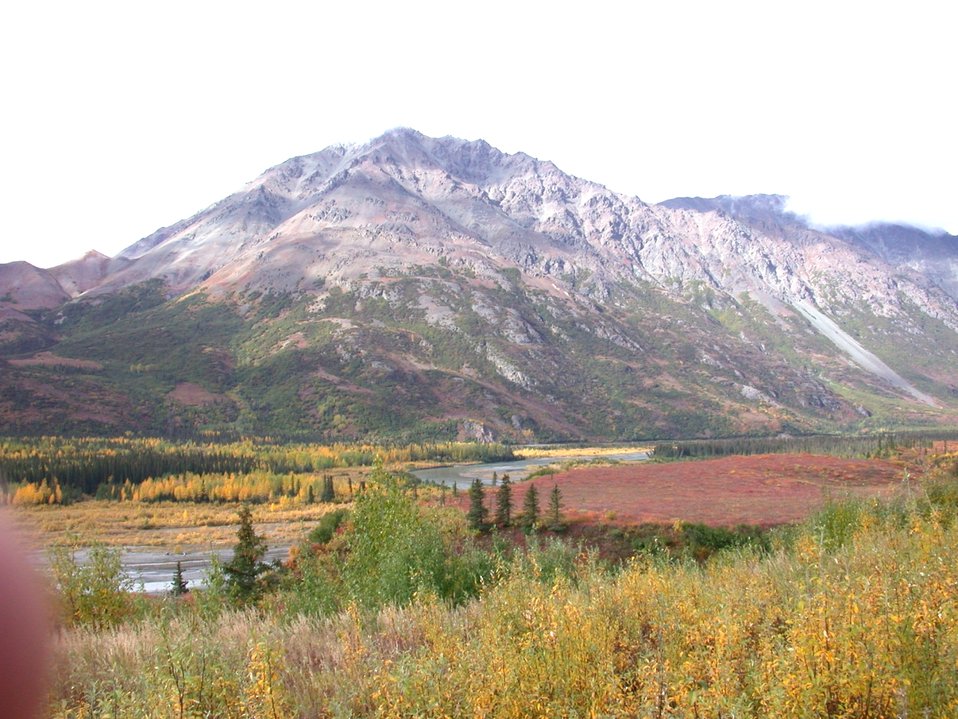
Mountain scenery in the fall north of Anchorage.